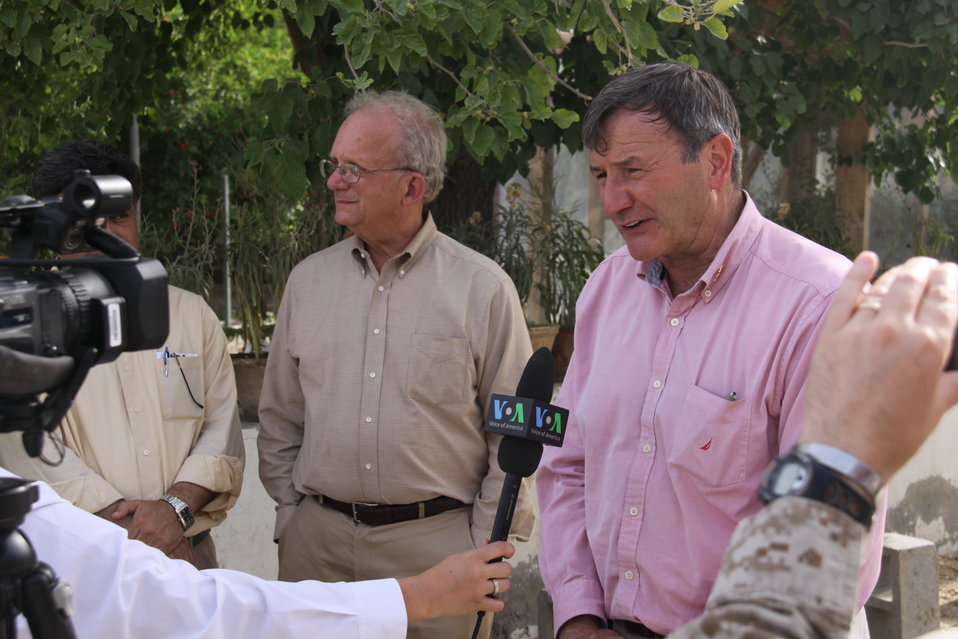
Meeting with Local Leaders in Kandahar